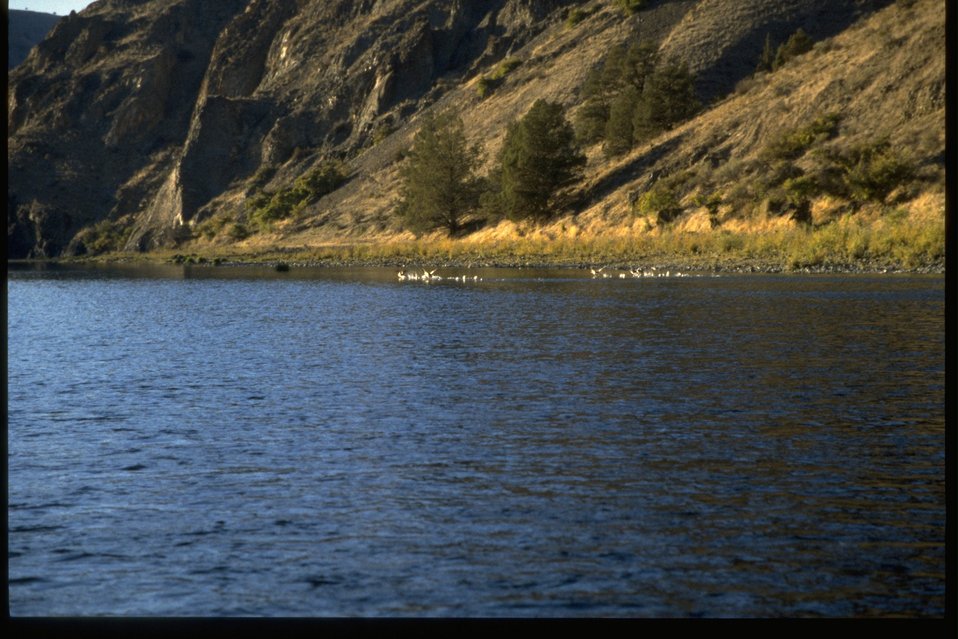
Long shot of geese taking off with riparian vegetation and juniper going up mountain.